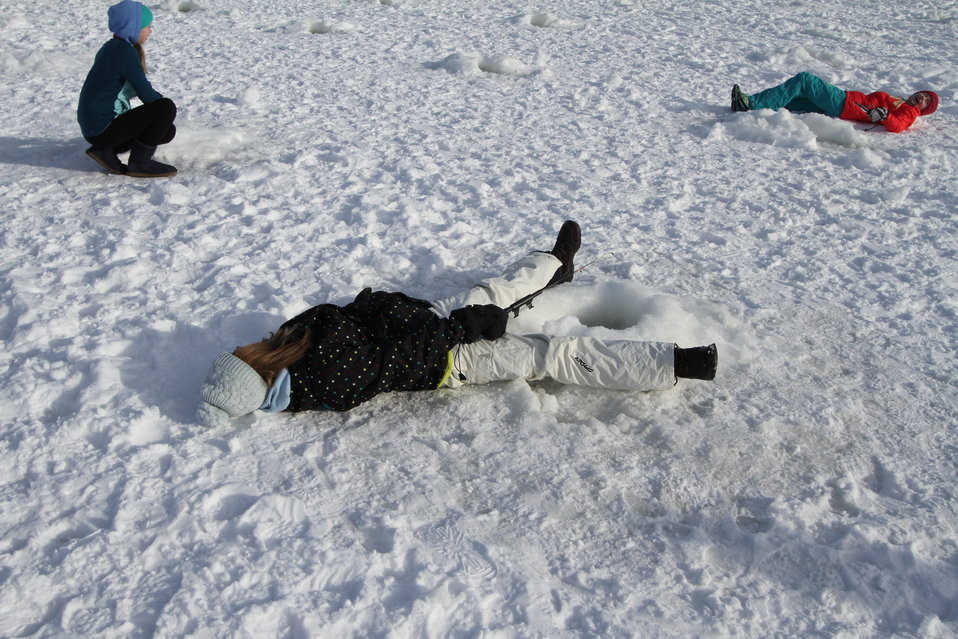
Connecting with nature!

enjoying some sun while learning how to ice fish in the single digits in February near Anchorage, Alaska. USFWS/Katrina Mueller